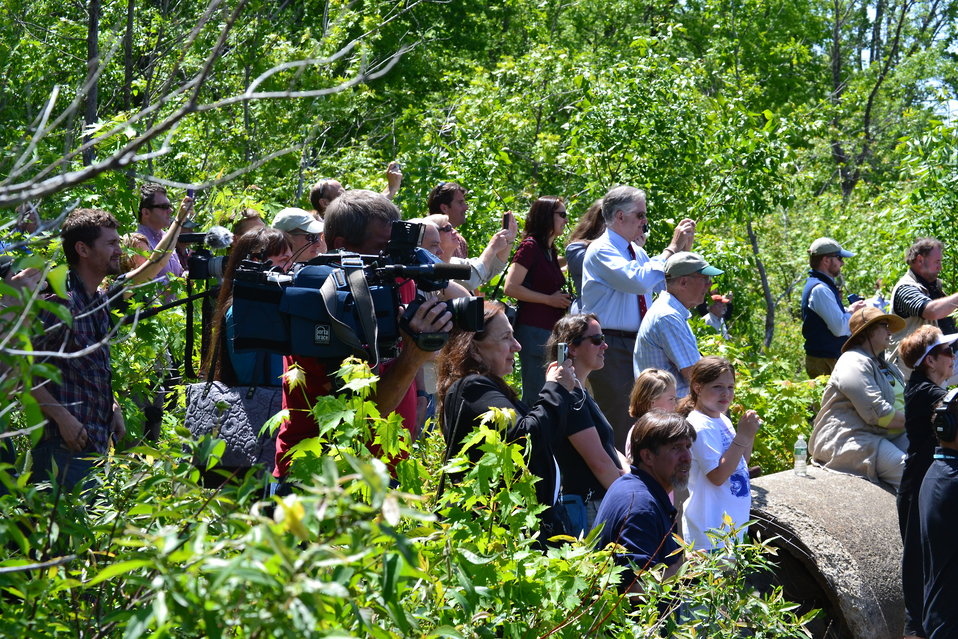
Crowd at event